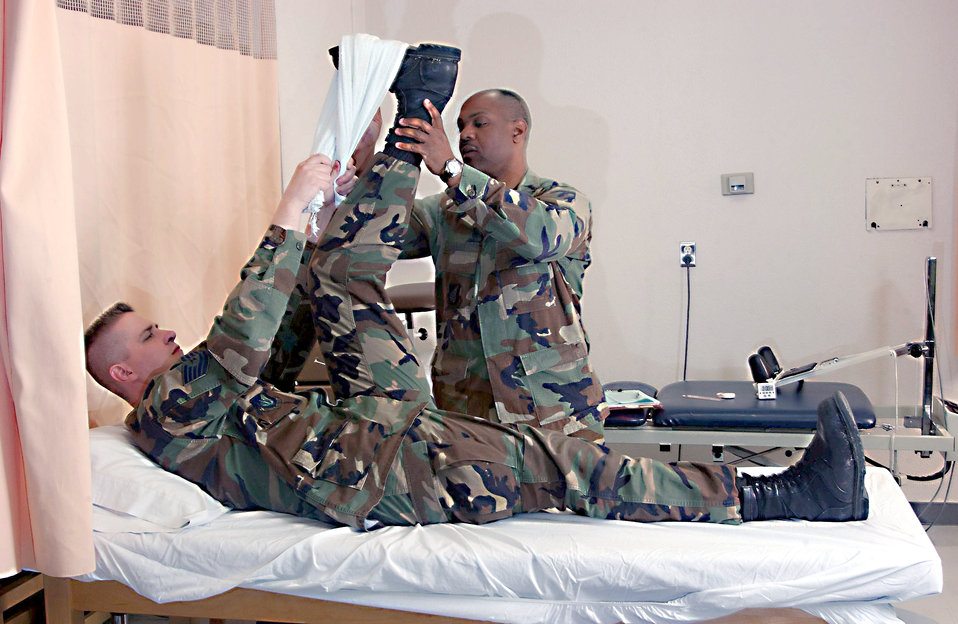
A long stretch

YOKOTA AIR BASE, Japan -- Maj. Raymond Bailey checks Tech. Sgt. Jim Crosson's foot for range and flexibility during rehabilitation treatment. Bailey is a physical therapist from the 374th Medical Group here. The physical therapy element provides services that help restore function, improve mobility, relieve pain and prevent or limit disabilities of thousands of patients each year.